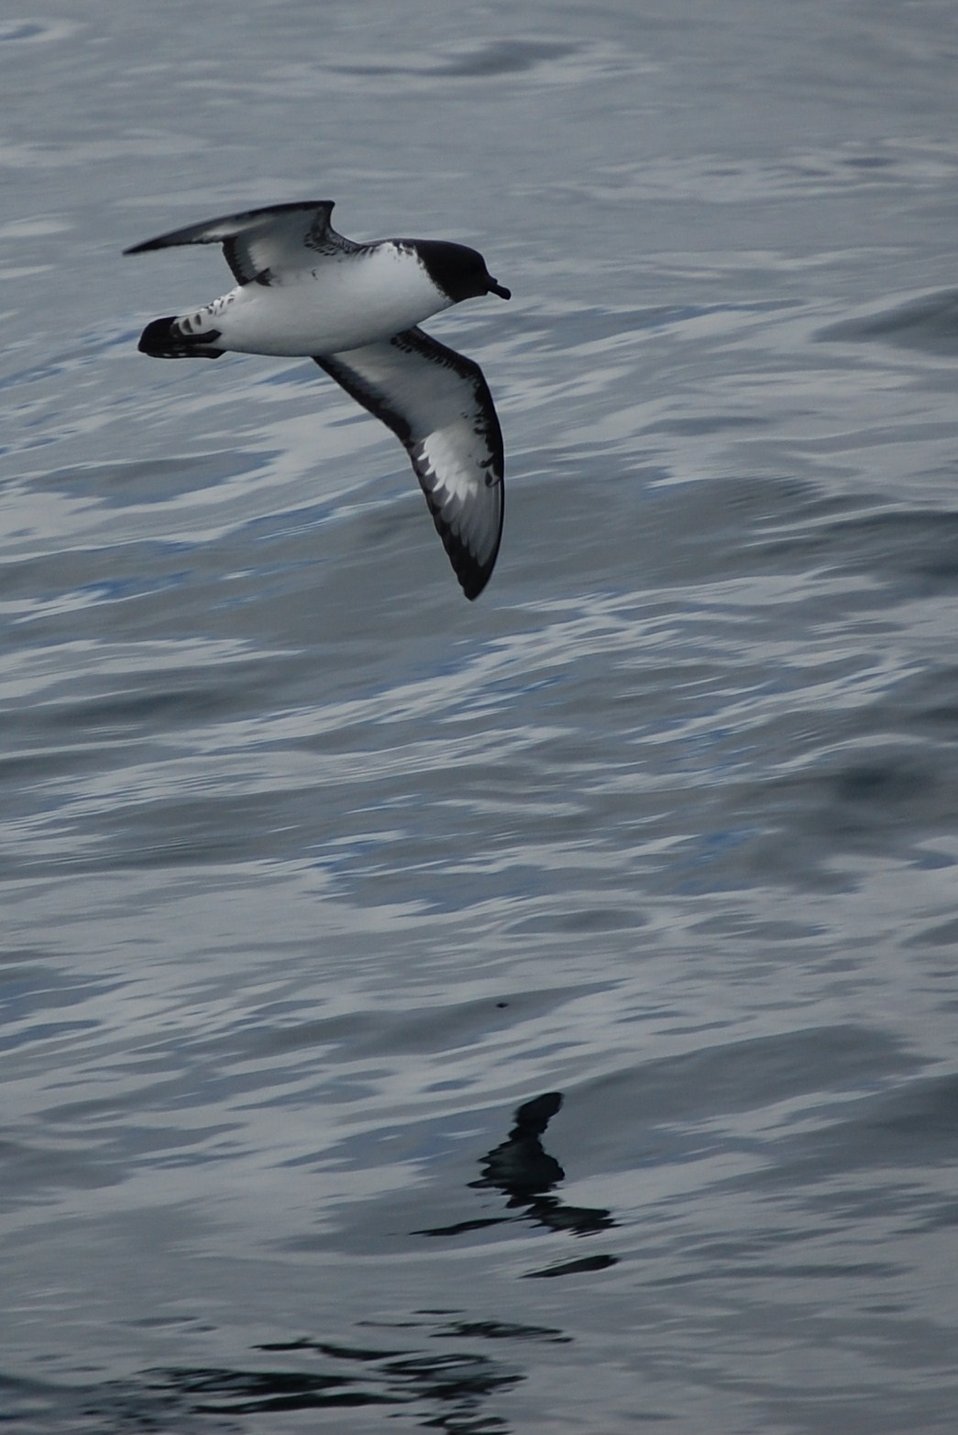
Cape petrel.